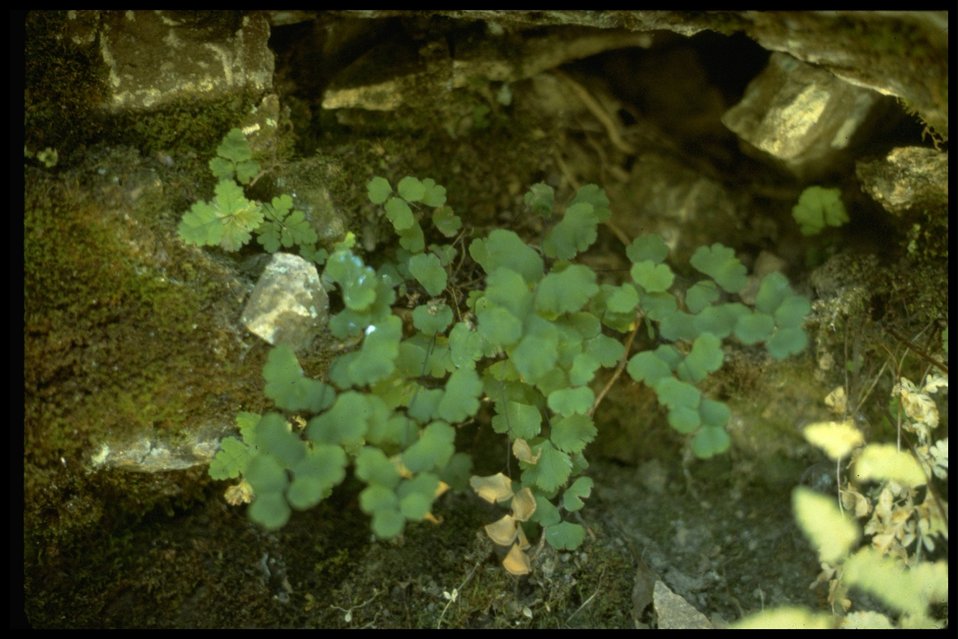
Adiantum jordanii, commonly known as California Maidenhair Fern.